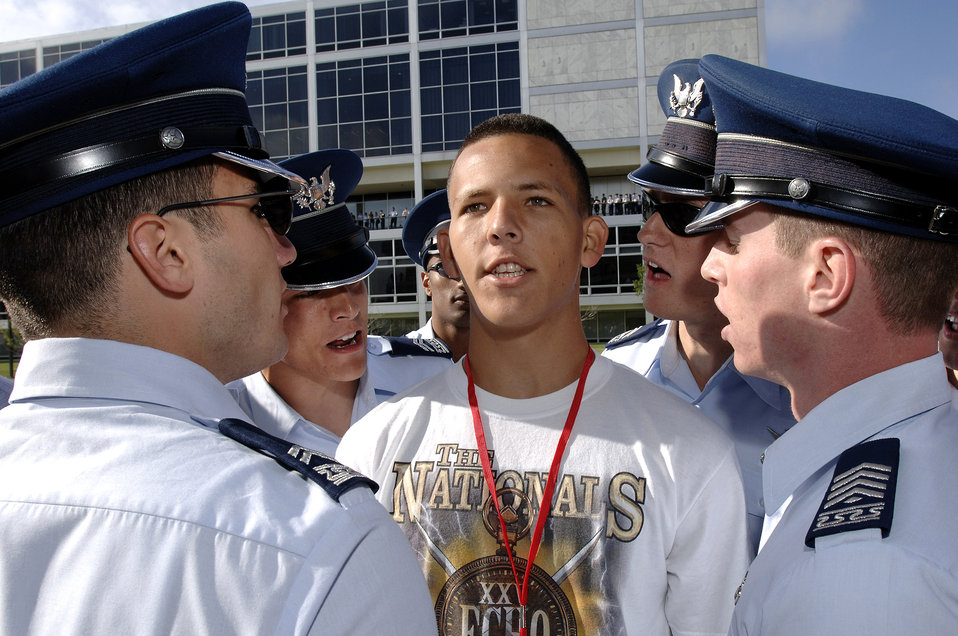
Welcome to the Air Force

Basic Cadet Trainee Yunior Cruz receives motivational training from numerous upper class cadets during inprocessing into the Class of 2011 June 28 at the U.S. Air Force Academy in Colorado. The 1,304 members arrived June 28 to begin basic cadet training.